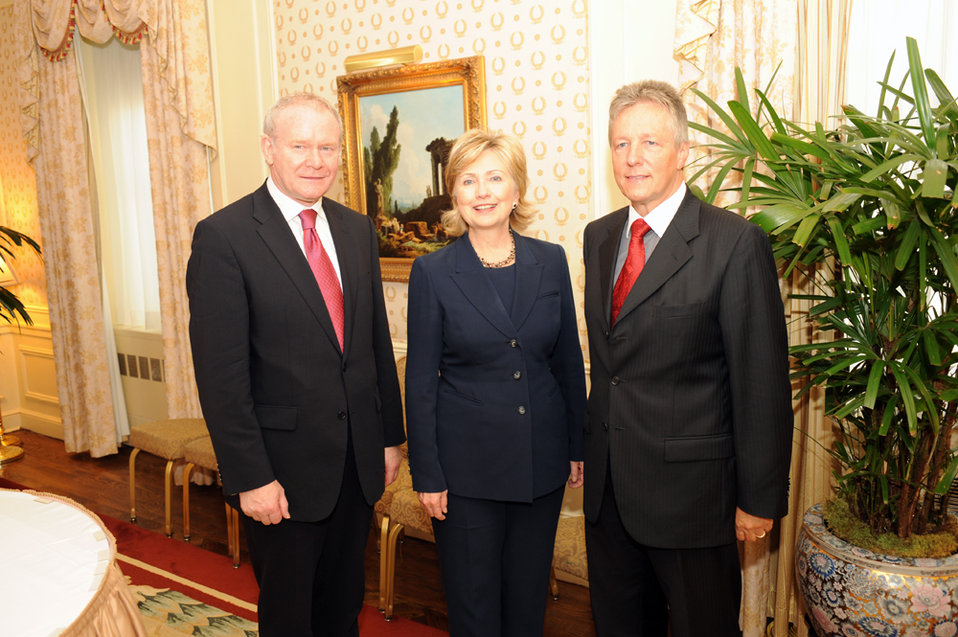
UNGA 2009: U.S.-Northern Ireland Joint Meeting

U.S. Secretary of State Hillary Rodham Clinton poses with Northern Ireland Deputy First Minister Martin McGuinness (left) and First Minister of Peter Robinson (right) during a U.S.-Northern Ireland joint meeting at the Waldorf Astoria hotel during the 64th Session of the UN General Assembly in New York City, New York September 24, 2009.